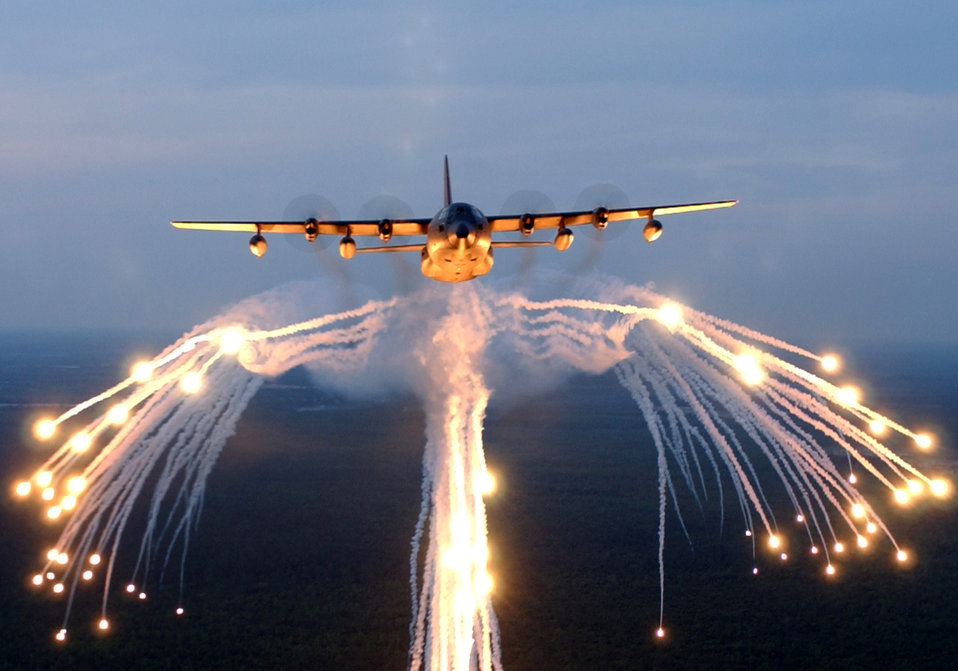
HC-130P/N King

The HC-130P/N is an extended-range version of the C-130 Hercules transport. Its mission is to rapidly deploy to execute combatant commander directed operations to austere airfields and denied territory for expeditionary, all weather personnel recovery operations to include airdrop, airland, helicopter air-to-air refueling and forward area refueling point missions.